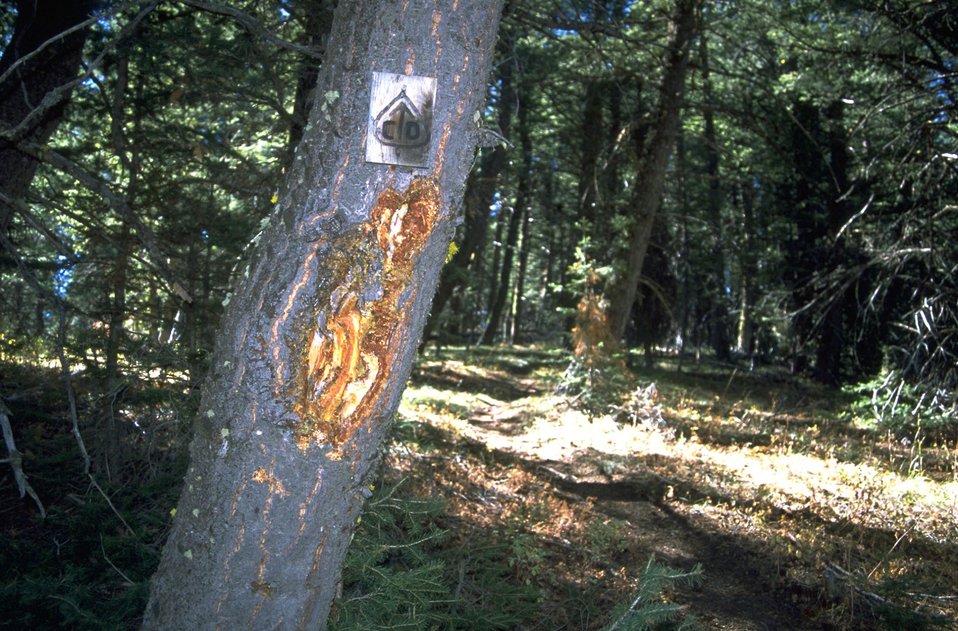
Sign marking continental divide trail on a blazed tree.